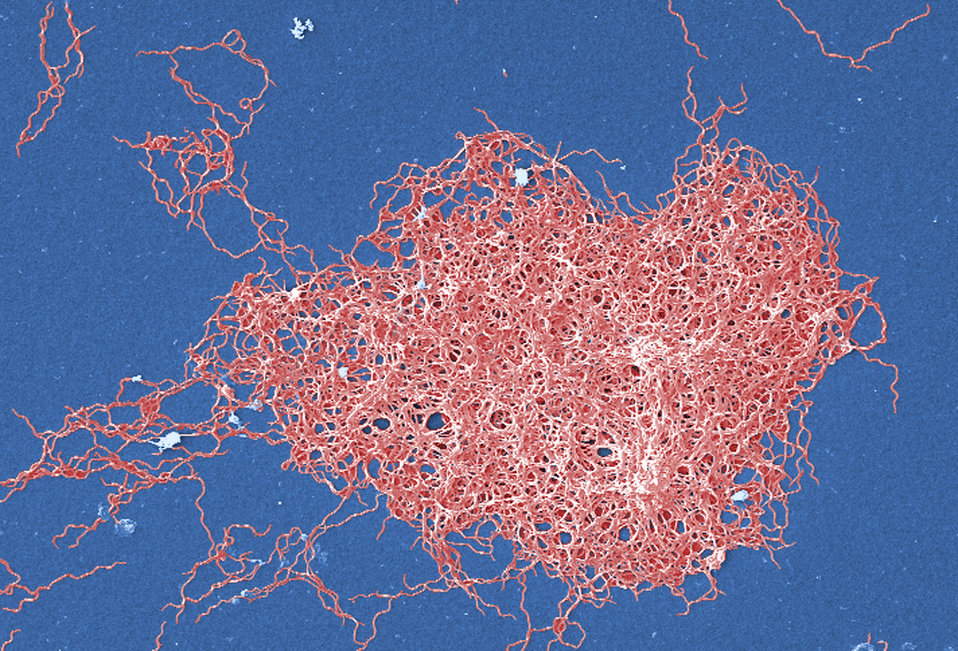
This digitally-colorized scanning electron micrograph depicts a grouping of numerous Gram-negative, anaerobic, Borrelia burgdorferi bacteria, which had been derived from a pure culture.